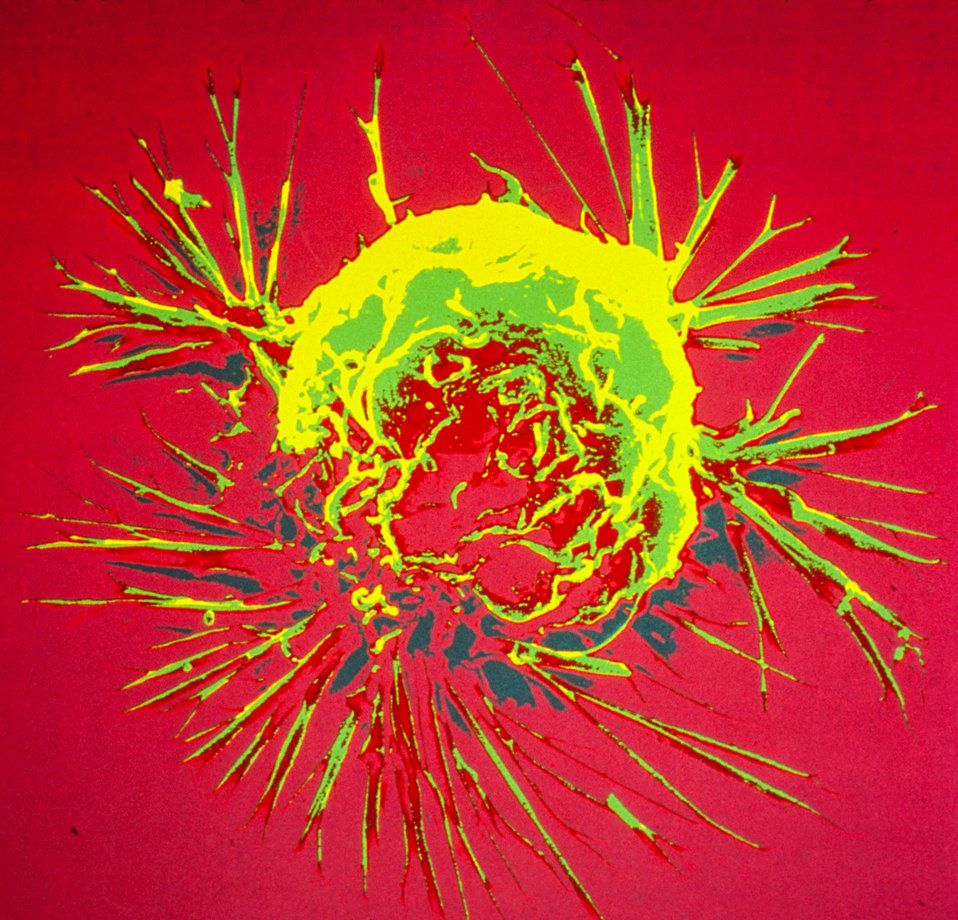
Breast Cancer and Alcohol Consumption

Electron micrograph of a single cell of breast cancer, one of the cancers for which risk increases with alcohol consumption.